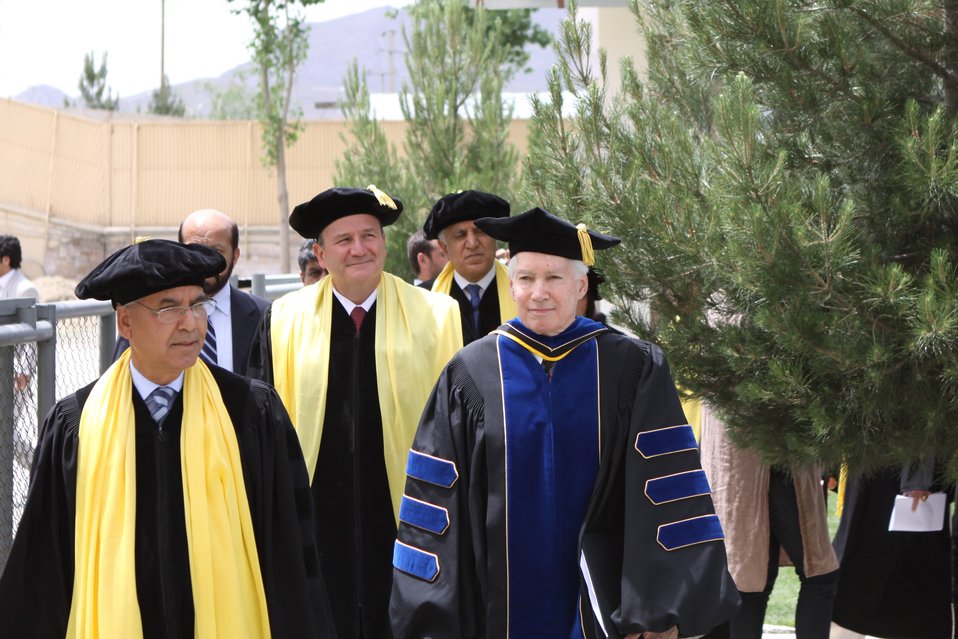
100526 AUAF Graduation 102